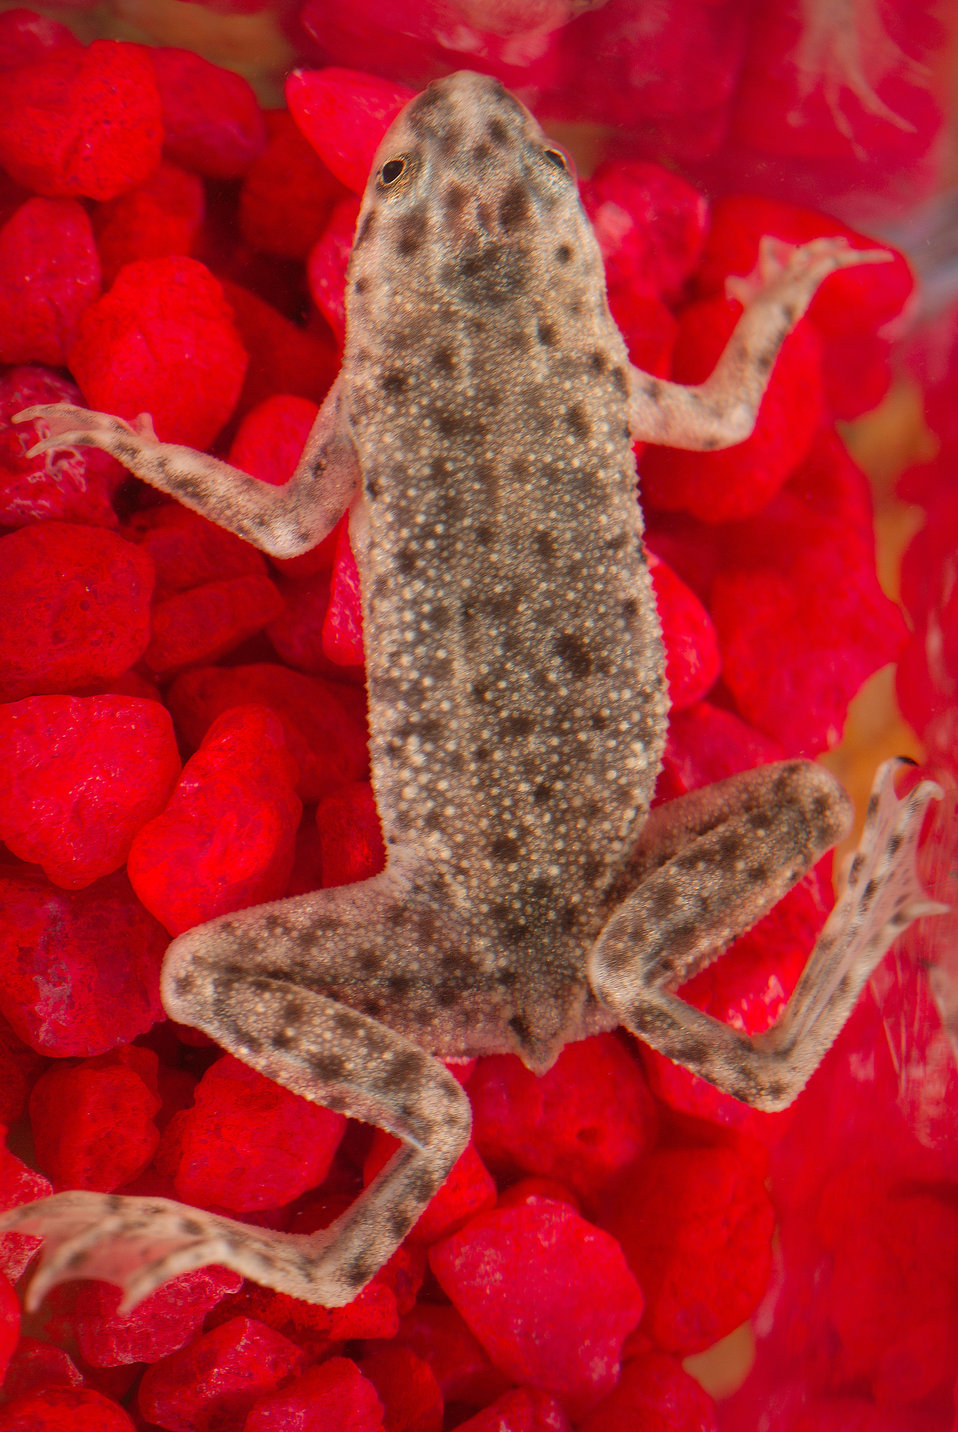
This photograph depicts an African dwarf frog, Hymenochirus boettgeri.